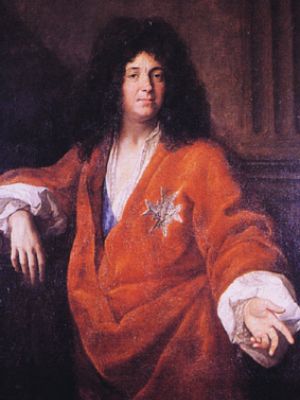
Louis de Gramont (1689-1745)